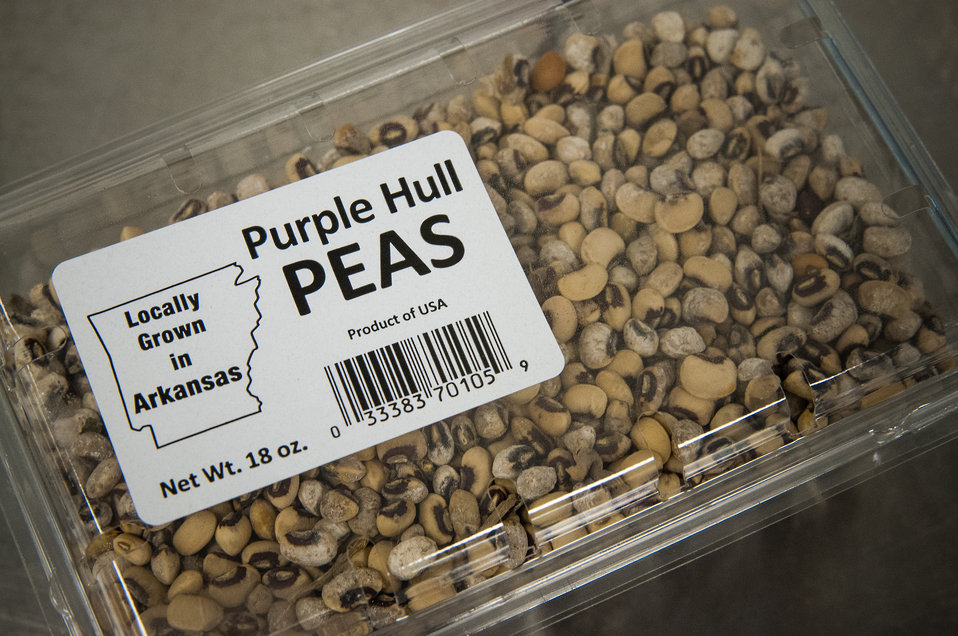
Purple hull peas processed at the University of Arkansas at Pine Bluff Agriculture Demonstration Outreach Center in Marianna, AR on Mar. 5, 2013. The Arkansas Delta Seeds of Change (ADSOC) was able to purchase the pea processing equipment with a U.S. Department of Agriculture (USDA) Rural Development (RD) Rural Business Enterprise Grant (RBEG). USDA in partnership with Heifer International (an international organization whose mission is to work with communities to end hunger and poverty and care for the Earth), and various for-profit and non-profit organizations have put in motion the “Seeds of Change Implementation Plan” to use sustainable agriculture to build food systems in the Arkansas Delta. The program has evolved into the ADSOC Initiative.The ADSOC Initiative assists producers with technical assistance for crop production, management, harvesting, food security, value added products and marketing options, and also provides access to specialized production and marketing equipment.